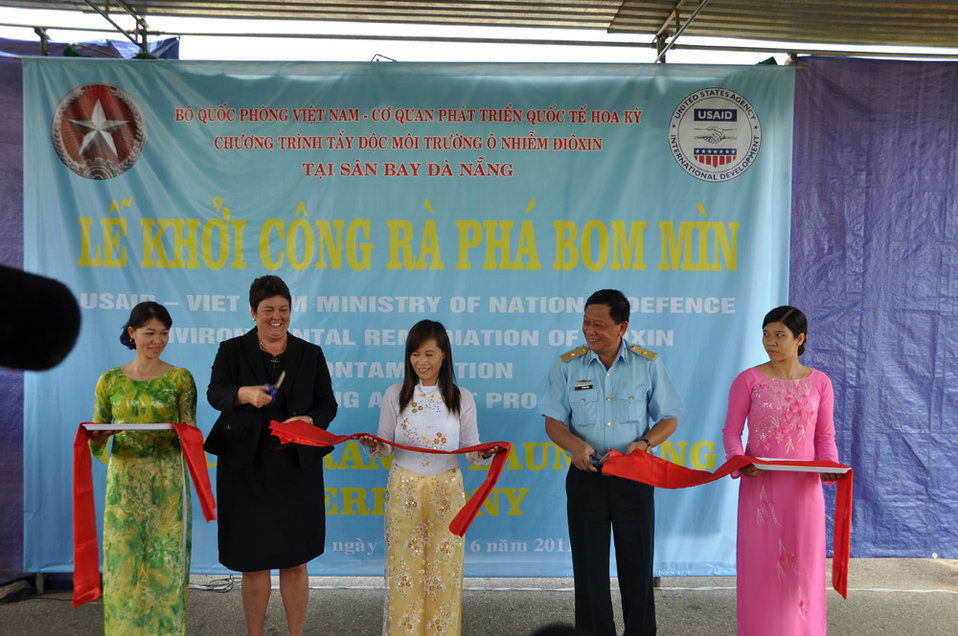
UXO clearance ceremony, June 17, 2011, in Danang, Vietnam.